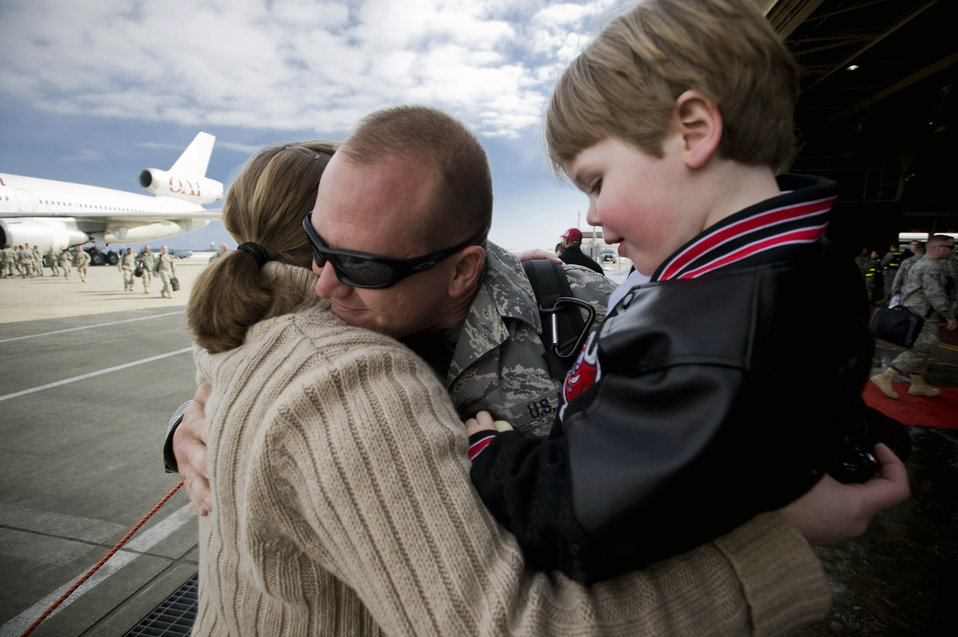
Misawa officials welcome home 300 deployed Airmen

Staff Sgt. Adam Yeo hugs his family March 1 at Misawa Air Base, Japan. Sergeant Yeo, a 35th Maintenance Squadron phase crew chief, returned from a deployment to Joint Base Balad, Iraq, in support of the 14th Fighter Squadron. He and his family hail from Florida.